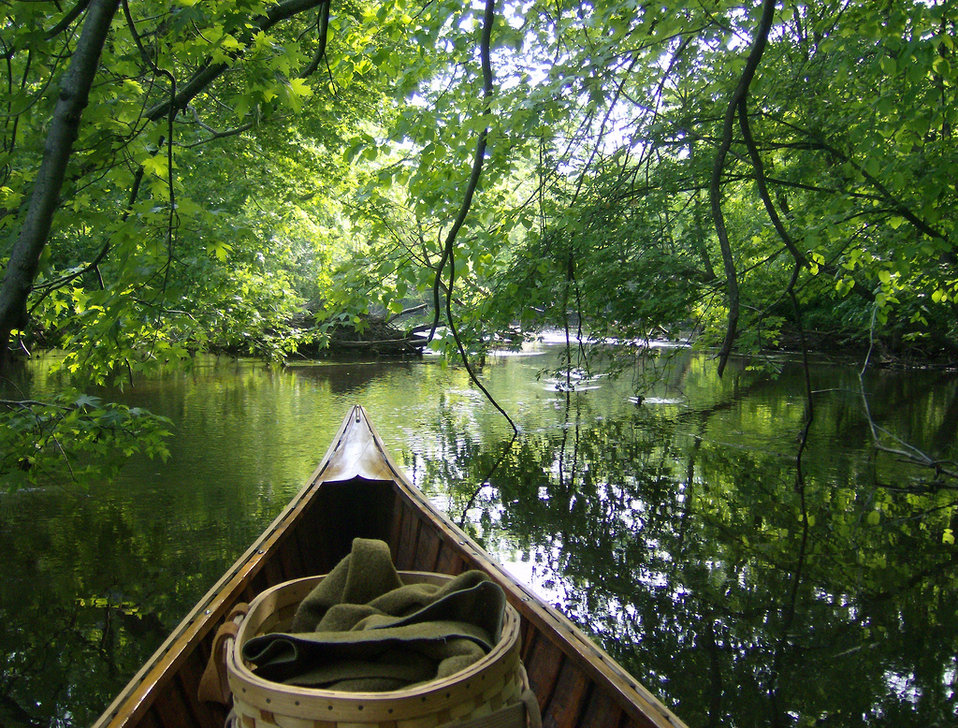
Richard Burkart, Grand Prize, Adult Division, BC River

Uploaded for Flickr member cmkosmowski.